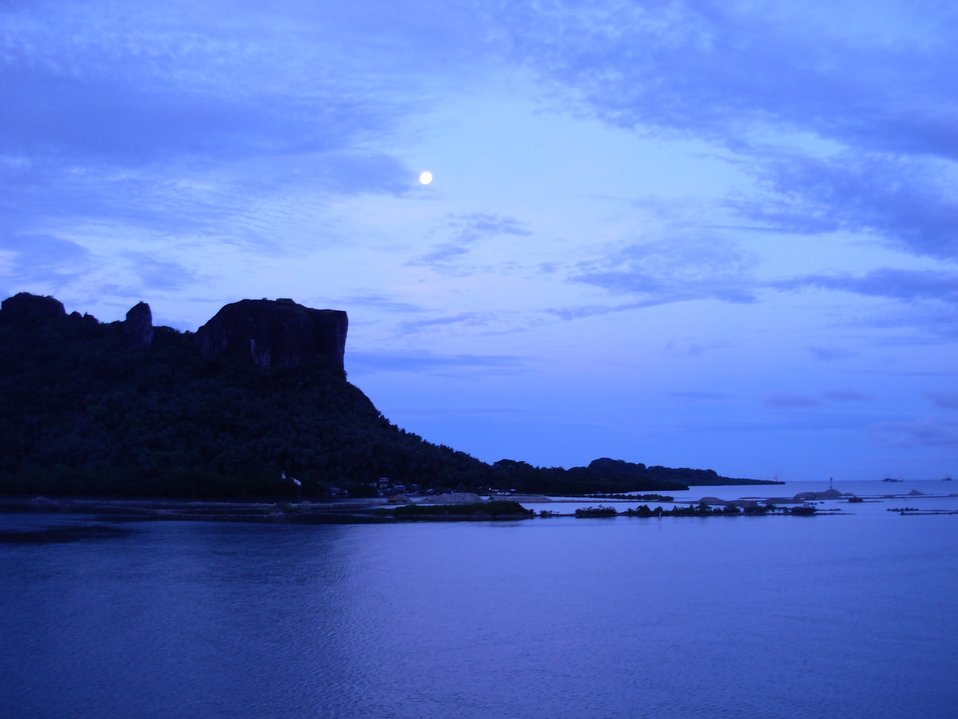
Paipalap peak (Sokehs Rock) rises 186 (610 feet) meters above the Pohnpei harbor. It is sometimes called 'The Diamondhead of Micronesia'